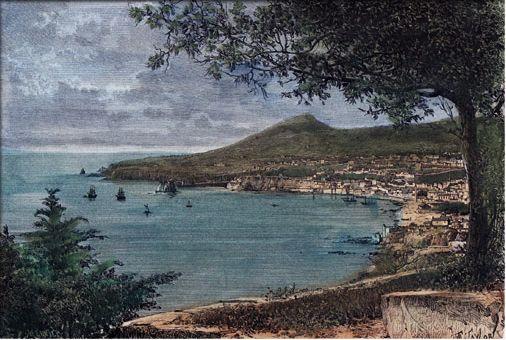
Baía do Funchal vista de Este - 1885